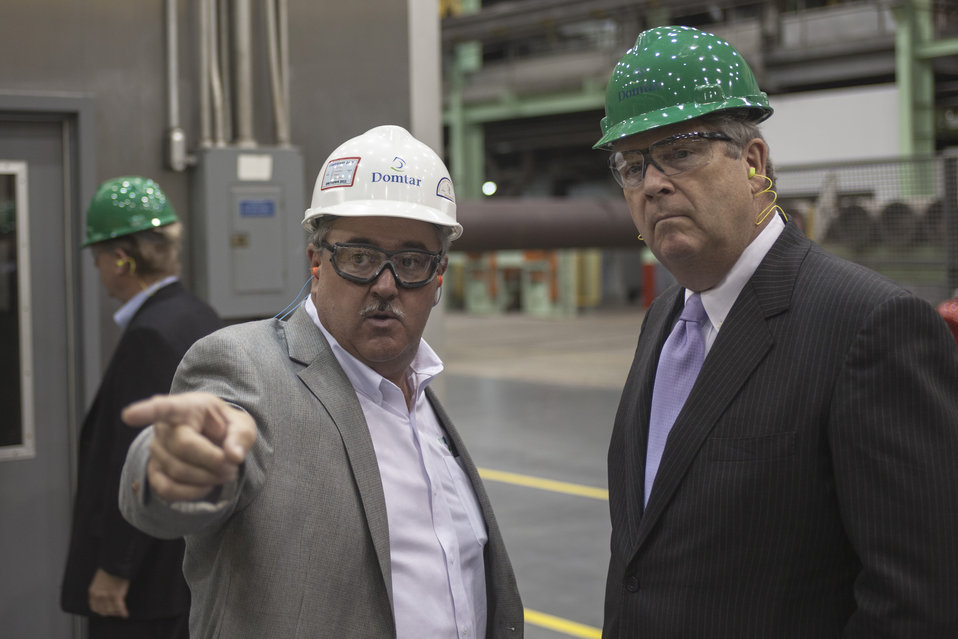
Agriculture Secretary Tom Vilsack (right) tours Domtar Inc. in Plymouth, NC on Friday, Aug. 15, 2013. Domtar produces lignin, a biobased material with the potential to create advanced new products and energy. Domtar is working with a number of partners, including the U.S. Forest Products Laboratory, on development of lignin applications that includes fuel additives, solid fuels, high performance adhesives and more. The U.S. Department of Agriculture (USDA) through a Biomass Research and Development Initiative funding s is the first of its type to open in the U.S. in more than 25 years.